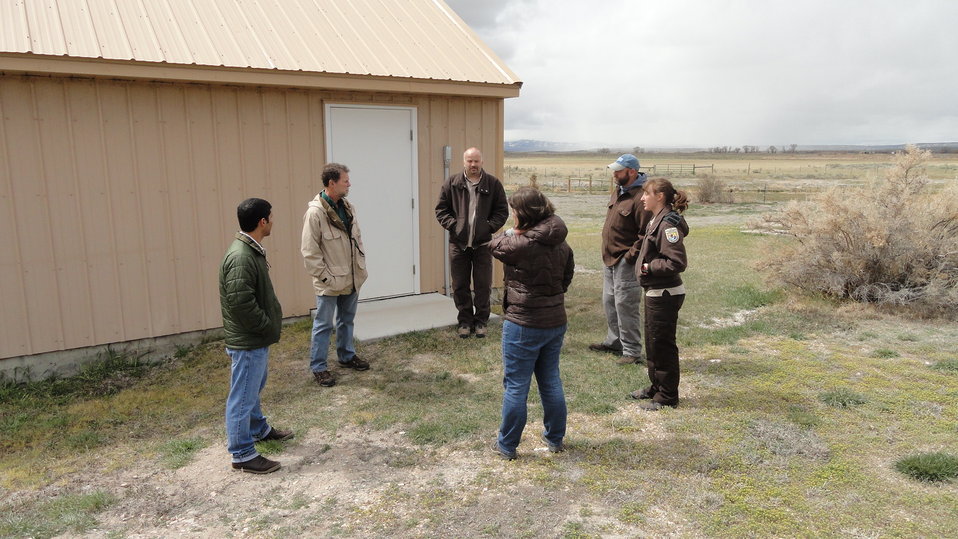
Visiting Saratoga National Fish Hatchery

In April of 2014, regional office employees visited Saratoga National Fish Hatchery to learn more about its efforts towards recovering the Wyoming toad (Bufo baxteri).

The hatchery adopted a unique role in becoming the first unit in the National Fish Hatchery System to become involved in rearing endangered amphibians. The Wyoming toad was a common sight on areas of the Laramie Plains, Albany County, Wyoming, into the early 1970s but the species' populations crashed in the mid-1970s. The Wyoming toad was listed as endangered by the U.S. Fish & Wildlife Service in January 1984. Found only in southwestern Wyoming, the Wyoming toad is considered the most endangered amphibian in North America. The hatchery maintains a captive population for breeding, rearing, and refugia, and the offspring from this program will be used for reintroduction efforts.